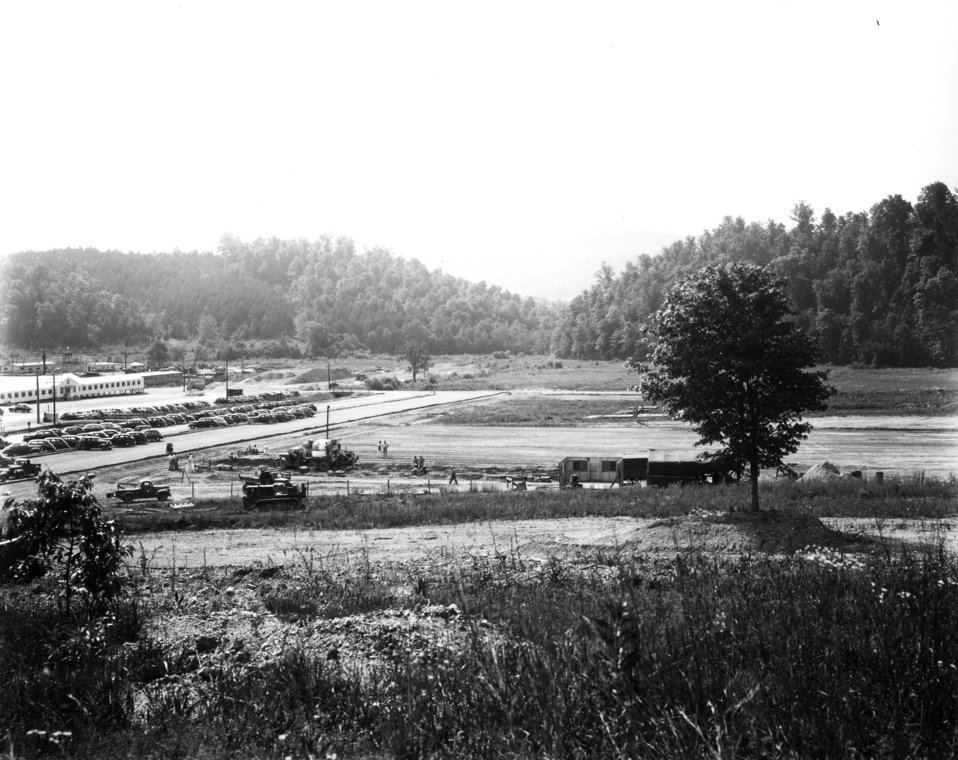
X-10 at Oak Ridge